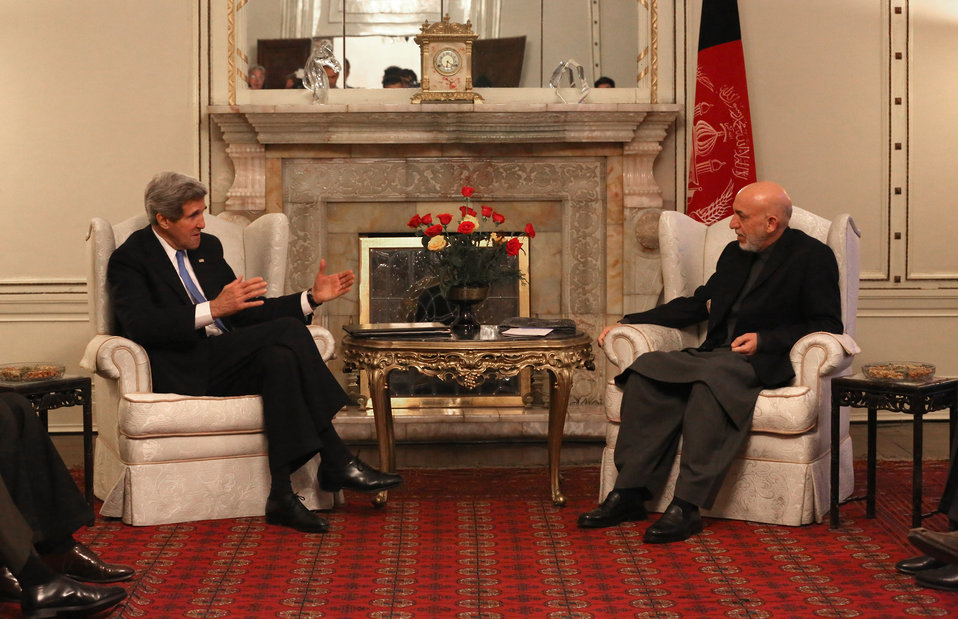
Secretary Kerry Meets With Afghan President Karzai

U.S. Secretary of State John Kerry meets with Afghan President Hamid Karzai at the Presidential Palace in Kabul, Afghanistan on March 25, 2013.